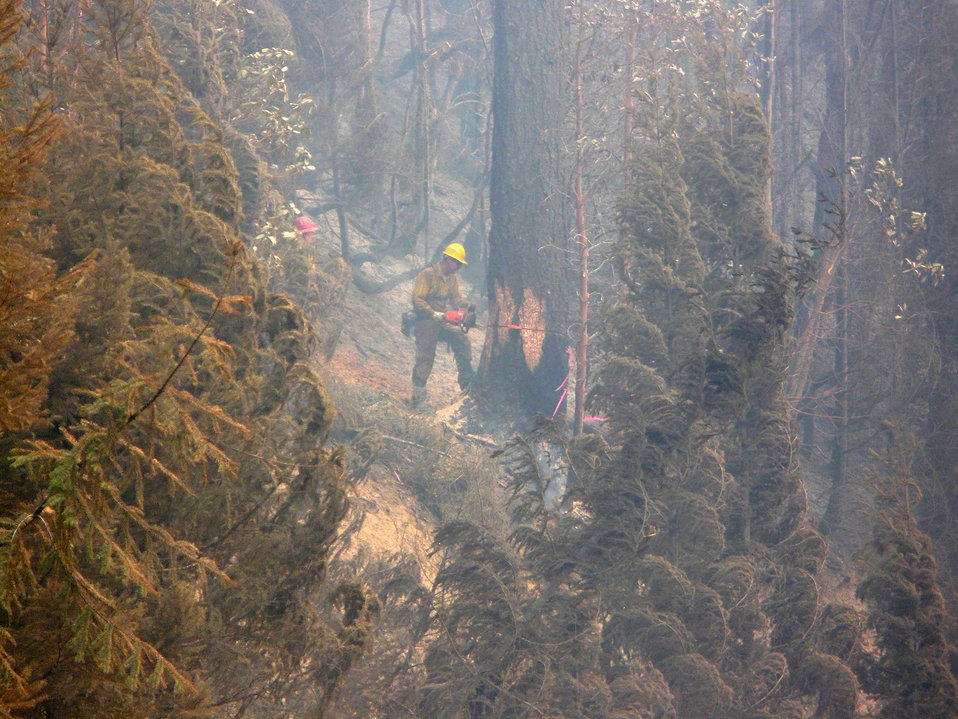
Firefighters fell trees in advance of the Brimstone Fire in Oregon. The Brimstone Fire near Merton, OR began on Jul. 26, 2013 began by lightning consumed 2,372 acres and is 100% contained.